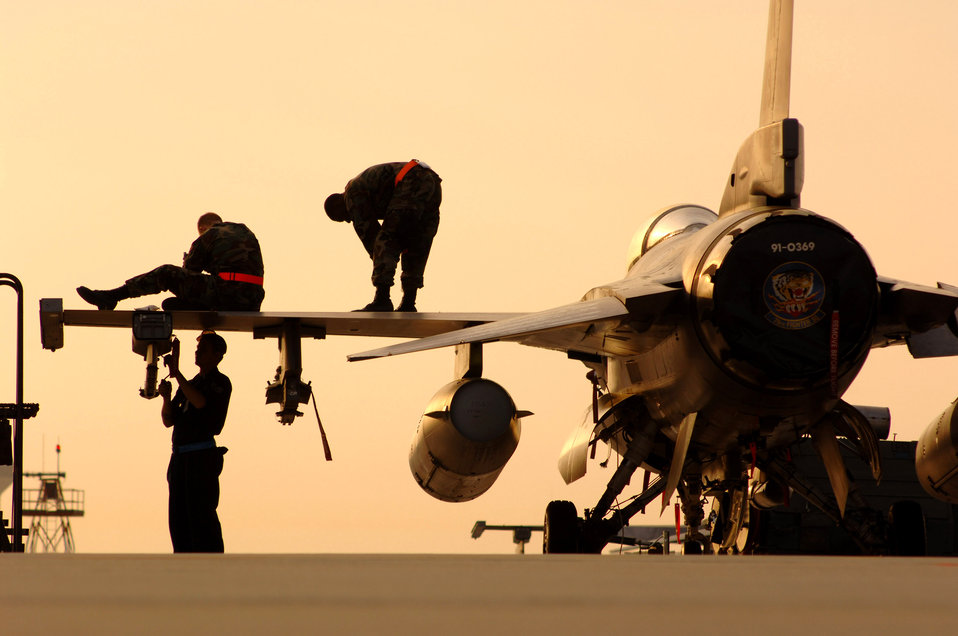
This one's about ready

Crew chiefs with the 79th Aircraft Maintenance Unit at Shaw Air Force Base, S.C., prepare an F-16 Fighting Falcon for take off during an operational readiness exercise. The exercises help prepare Airmen for future deployments.